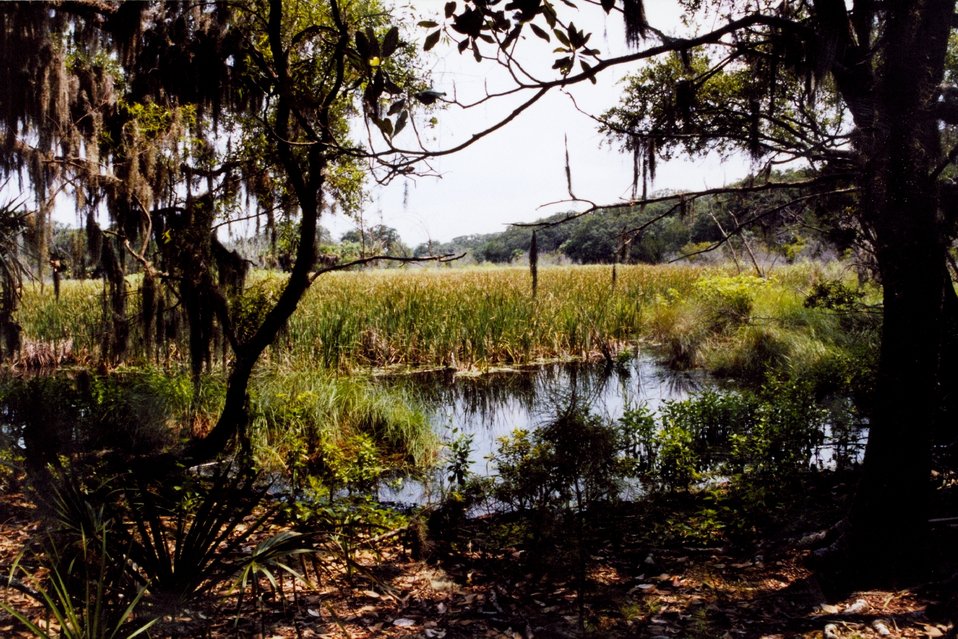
Tidal wetlands with oaks and Spanish moss